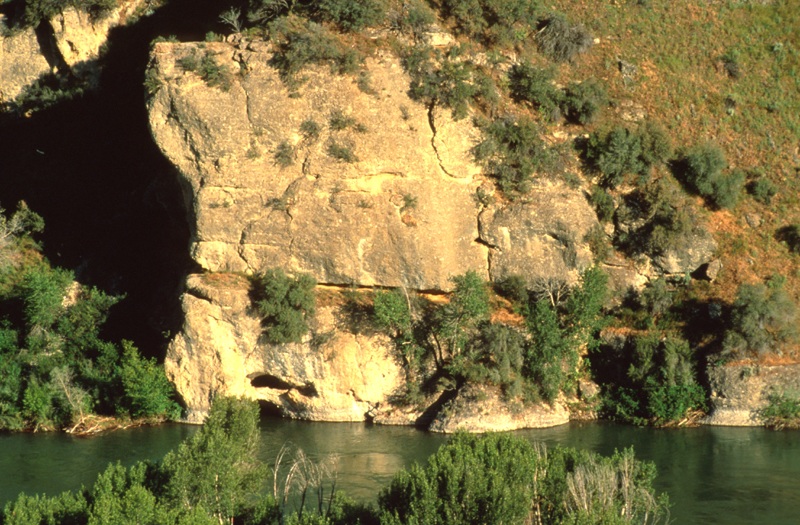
South Fork of the Snake River